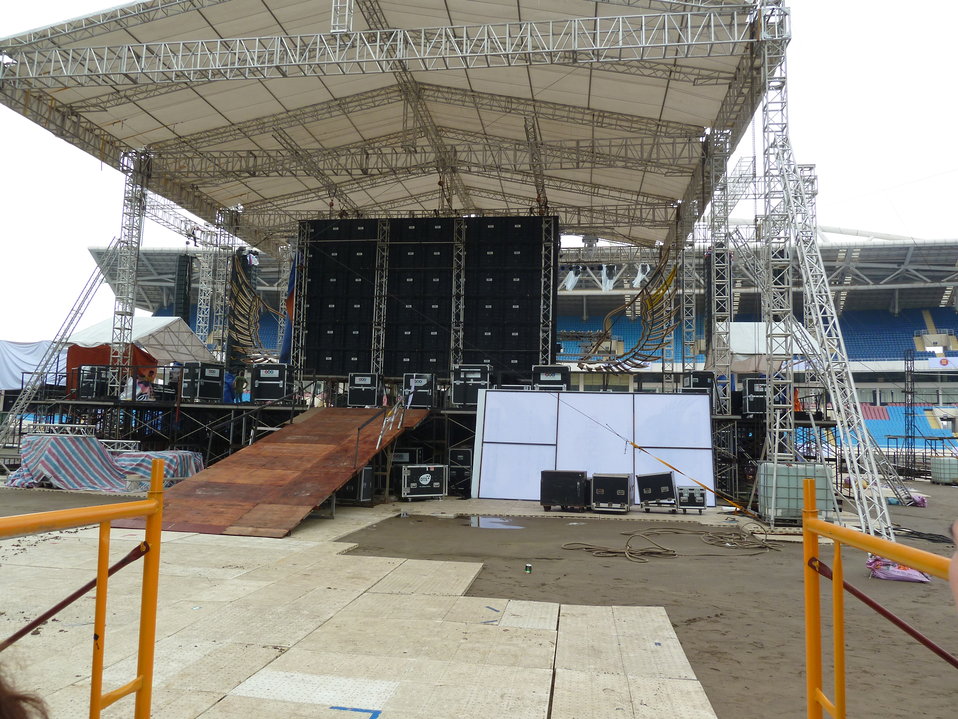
Preparations under way for big MTV EXIT concert in Hanoi on May 26, 2012

Co-sponsored by USAID.